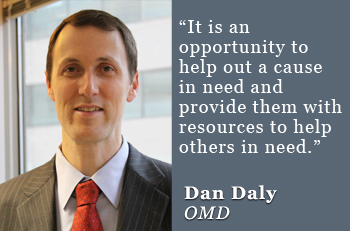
Dan Daly

'I give because it is an opportunity to help out a cause in need and provide them with resources to help others in need.'